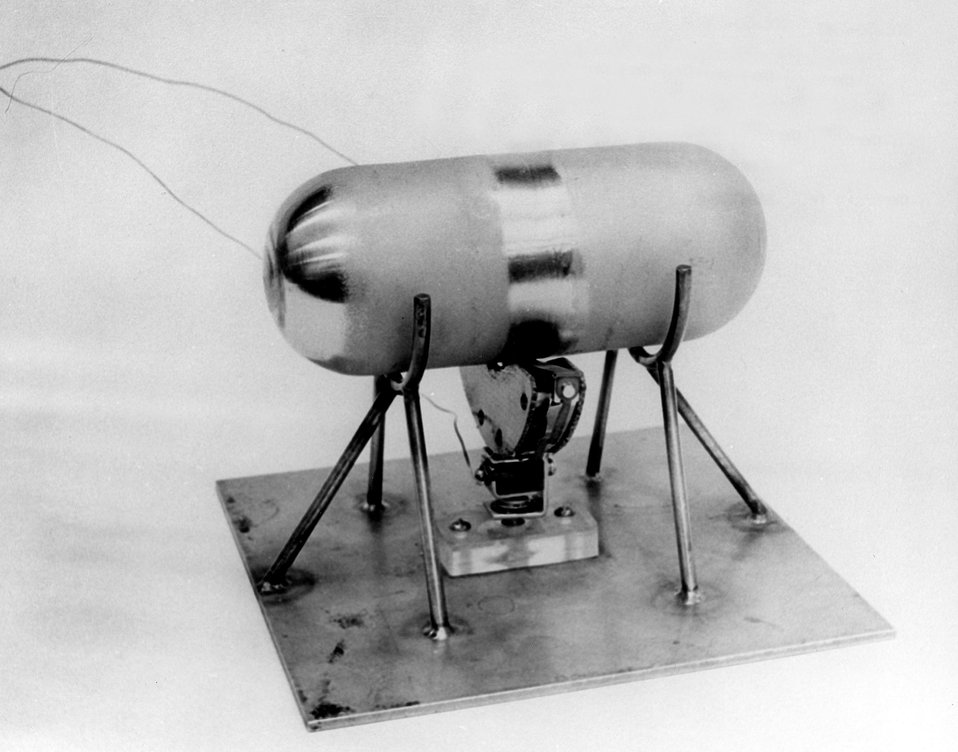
Miamisburg, Ohio... SNAP-19B Heat Sources... Two SNAP-19B heat sources from Mound Laboratory were used to power the nuclear generators for the Nimbus-B advanced weather satellite. Here, the surface temperature of the capsule, approximately two inches in diameter by six inches long, is being measured by a thermometric prior to assembly.